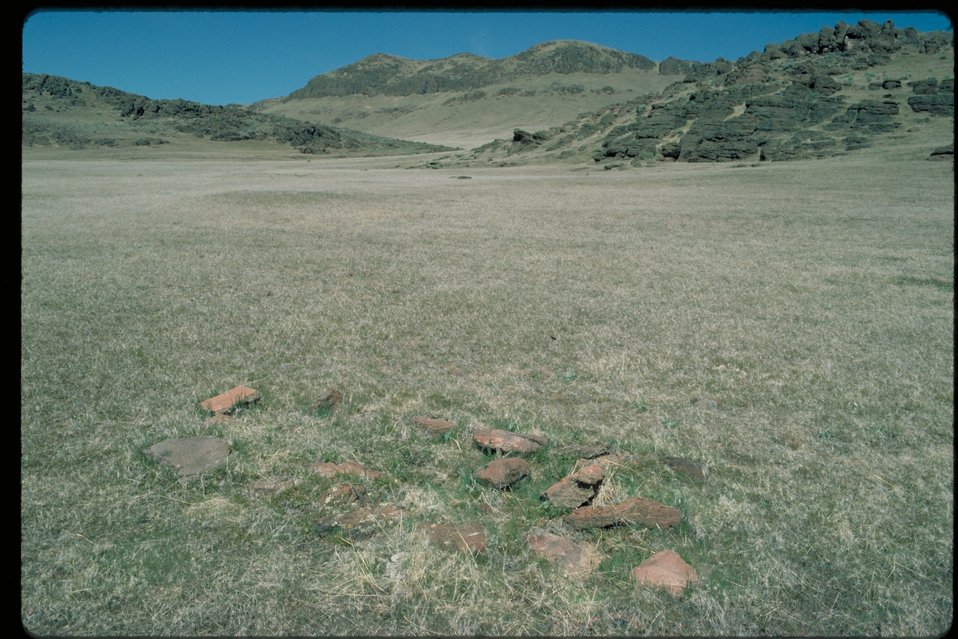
Road southeast of Canyon Creek Oregon Trail Lower Snake River District